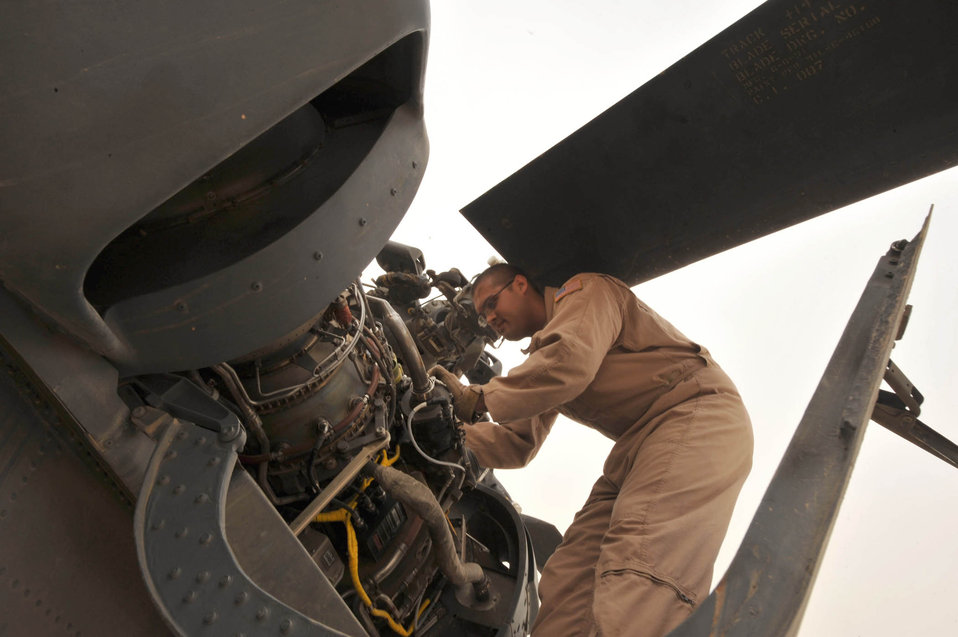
Personnel recovery team lives up to motto

Staff Sgt. Dave Lamica conducts preflight checks on an HH-60G Pave Hawk before a training flight May 15, 2010, at Joint Base Balad, Iraq. Sergeant Lamica is a flight engineer assigned to the 64th Expeditionary Rescue Squadron.